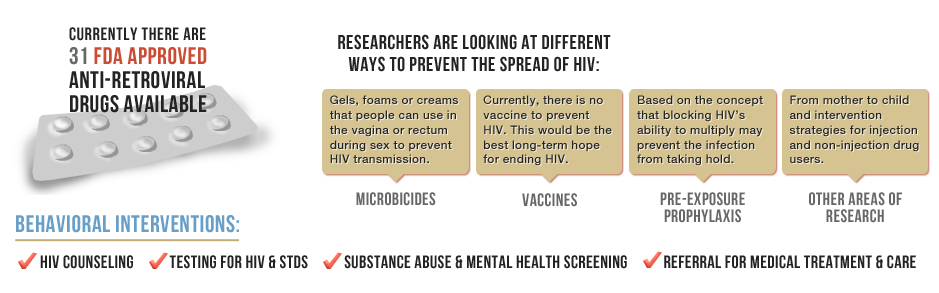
research